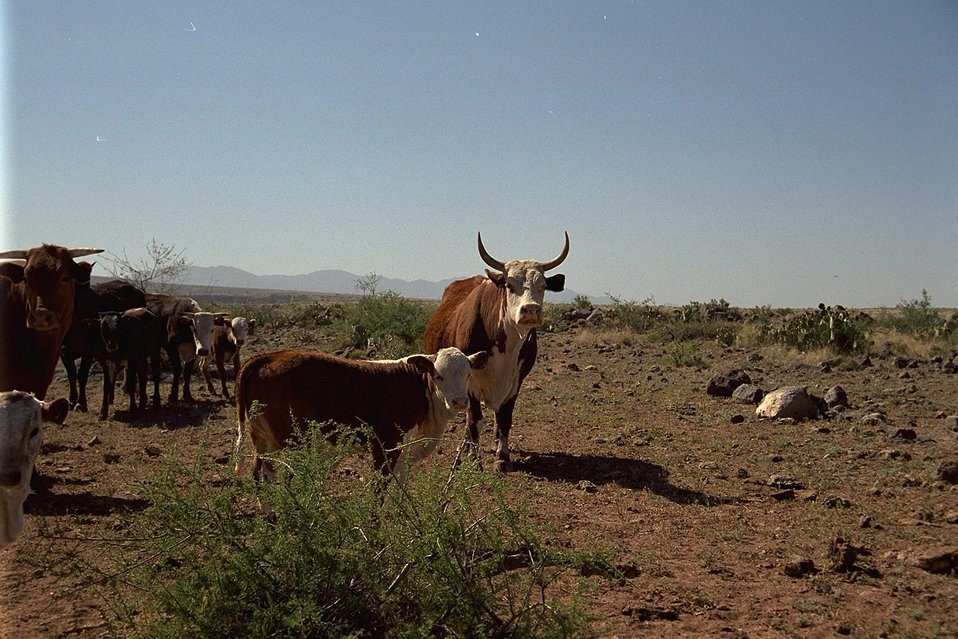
Moo! Cattle Grazing near the Richbar mine site in the Agua Fria National Monument.